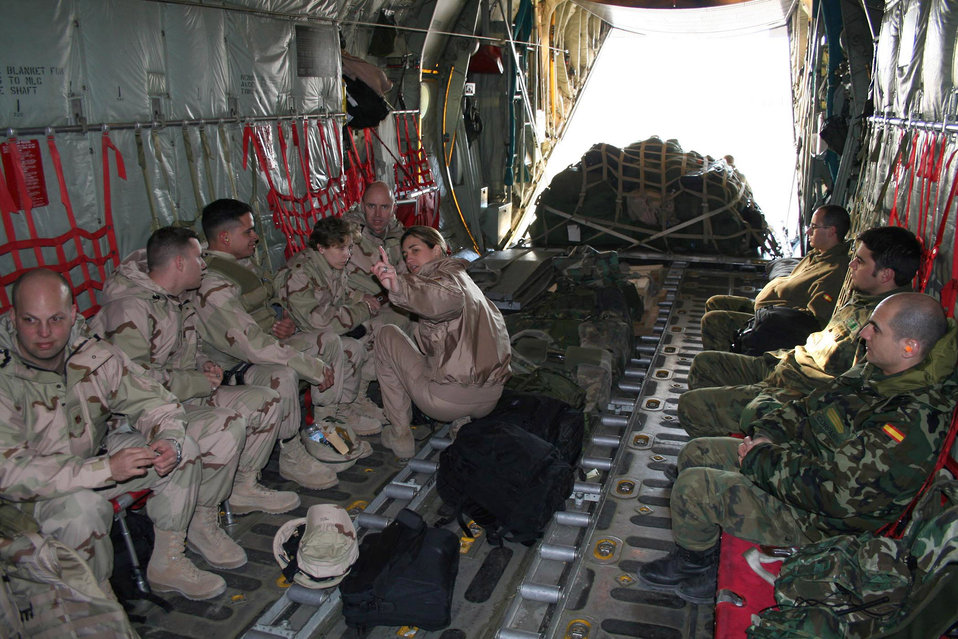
Coalition troop movement

Capt. Margarita Correas gives Air Force officers a flight safety brief before takeoff Friday, March 3, 2006. The detachment flew the group to Kabul, Afghanistan, during a shuttle flight for Spanish troops headed into and out of Afghanistan. The flights help the base with the movement of unusually large influxes of troops and saving the officers a convoy ride from Bagram to Kabul. The captain is a C-130 Hercules navigator with the Spanish detachment at Manas Air Base, Kyrgyzstan.